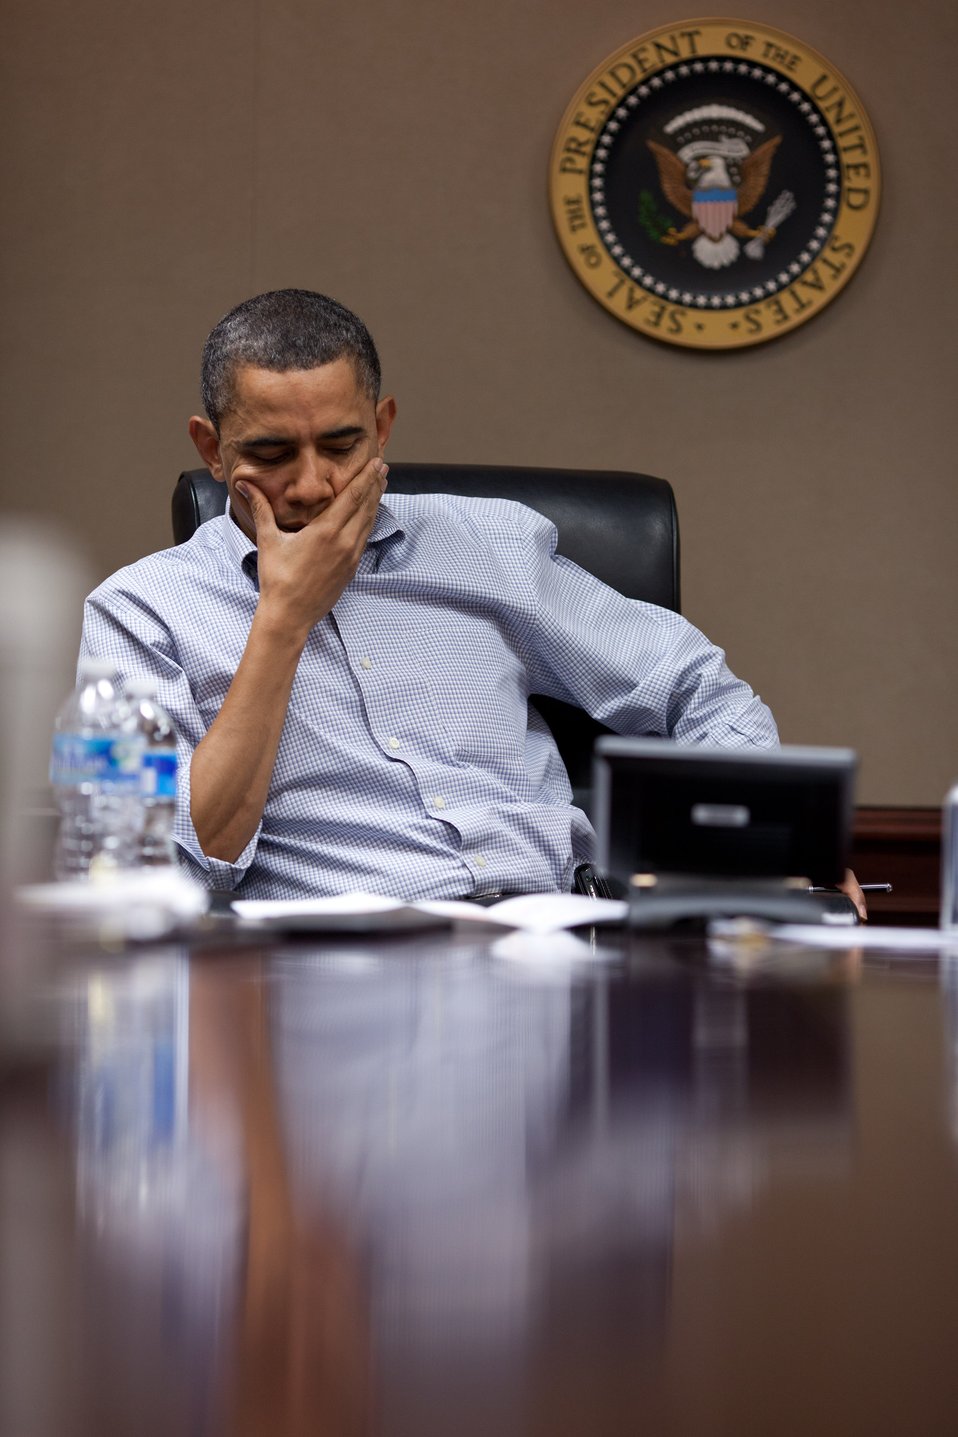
March 26, 2011
'More often than not, the President is in the office on most Saturdays to convene a national security or economic meeting. Here, on a Saturday in March, the President listens during a conference call on Libya in the Situation Room of the White House.'